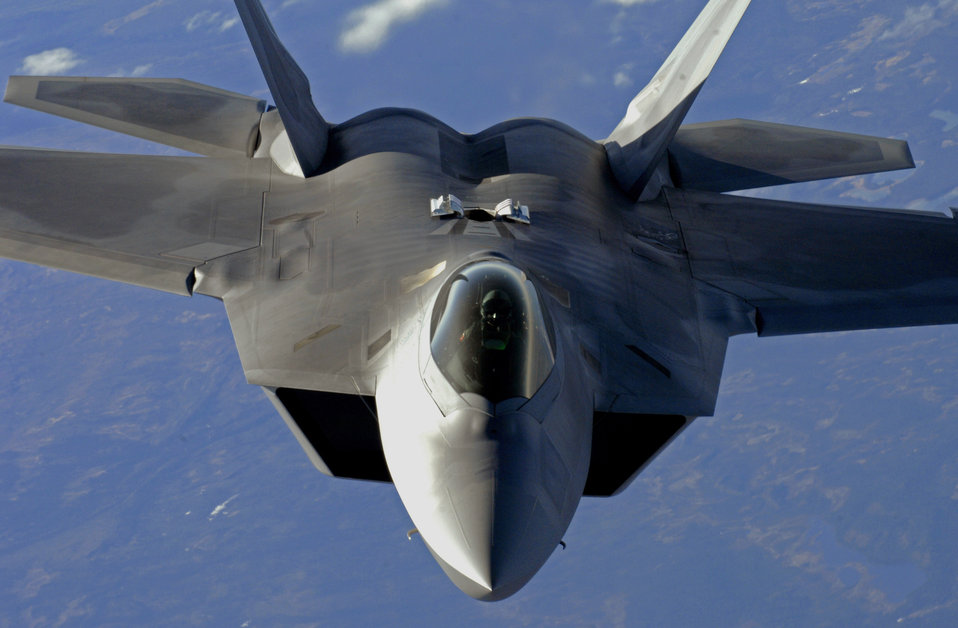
Fighters refuel over Alaska

An F-22 Raptor from Elmendorf Air Force Base, Alaska, drops back after receiving fuel from a KC-135 Stratotanker over Alaska May 26, 2010.